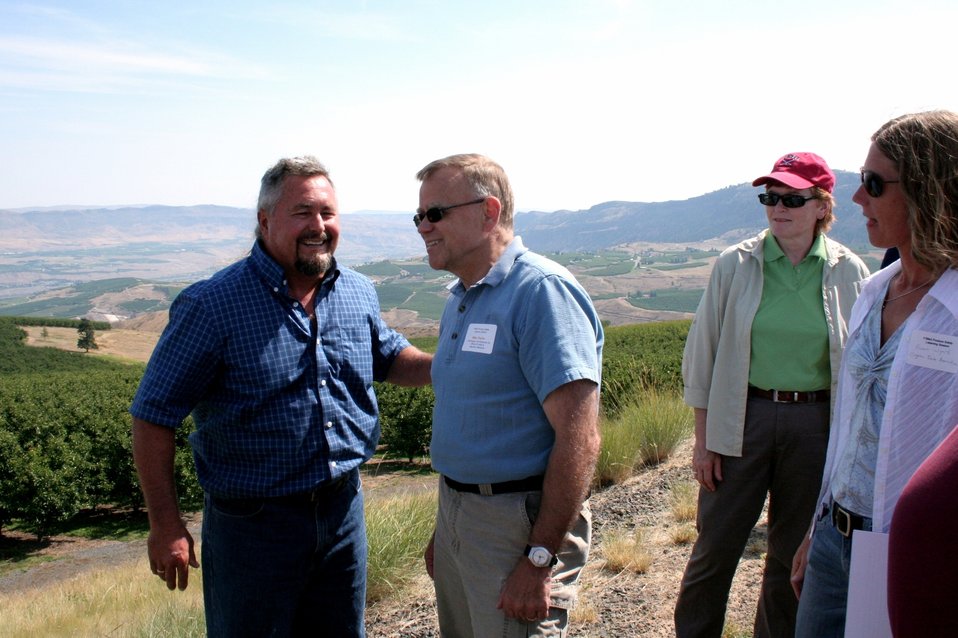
On the Road with Mike Taylor

FDA Deputy Commissioner Michael Taylor (center) talks with Kyle Mathison of Stemilt Growers (left) in Wenatchee, WA. Mike and colleagues started a five-day tour of the Pacific Northwest on Sunday, Aug. 11, 2013 -- visiting Idaho, Oregon and Washington -- to get a first-hand look at produce production and irrigation operations, and to discuss the proposed Produce Safety Rule with growers, food industry representatives and state officials.For more about Mike's multi-region tour, read these FDA Voice blog posts:

• Hearing the Concerns of Maine Growers Striving for Agricultural Diversity
• On the Road with Mike Taylor: Touring the Pacific Northwest
• On the Road with Mike Taylor, Day 2: Frank Talk in Farm Country
• On the Road with Mike Taylor, Day 3: Families and Partnerships
• On the Road with Mike Taylor, Day 4: Looking to the Future